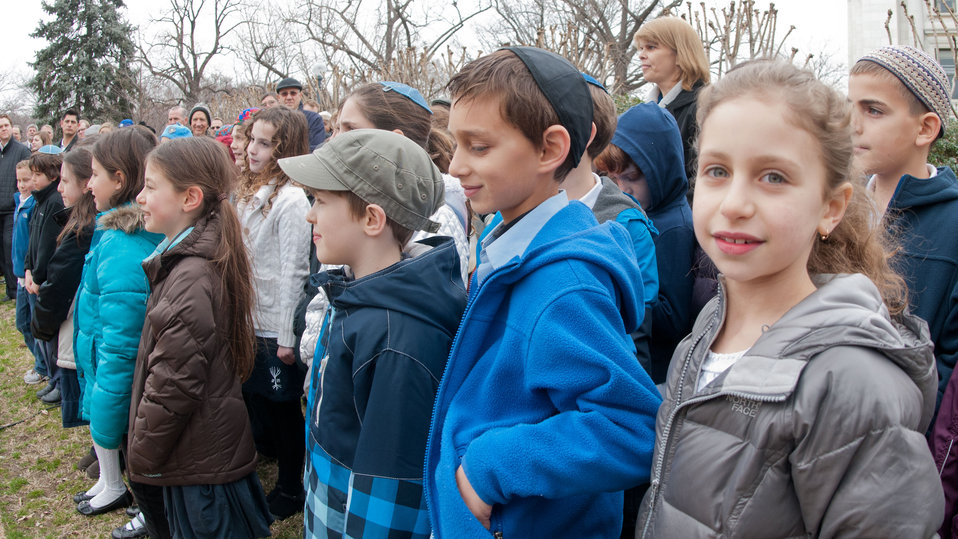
3rd Grade Class of the Jewish Primary Day School of the Nation’s Capital listen to government representatives address the audience, during the Celebration of Tu B’Shevat “The New Year of the Trees” event, at the District of Columbia western lawn next to the USDA Headquarters, Whitten Building at 14th Street and Independence Ave SW, Washington, D.C. on Wednesday, February 8, 2012.